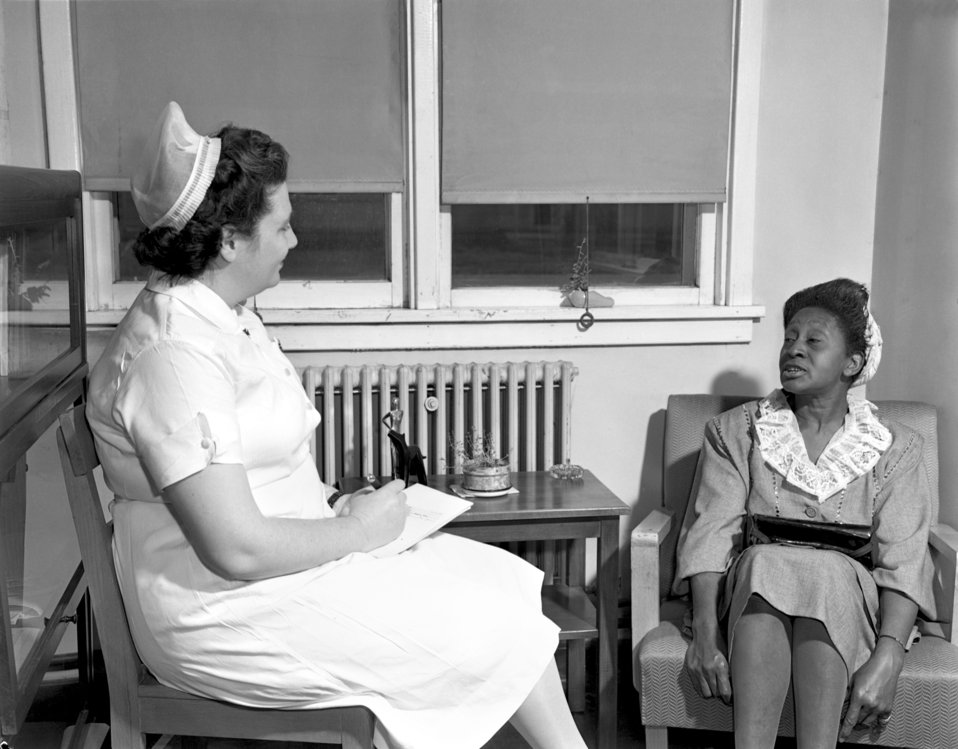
Public Health Nursing Oak Ridge 1947

3392-b DOE photo Ed Westcott 4-15-1947 Publicity for National Nurse Week Oak Ridge Tennessee